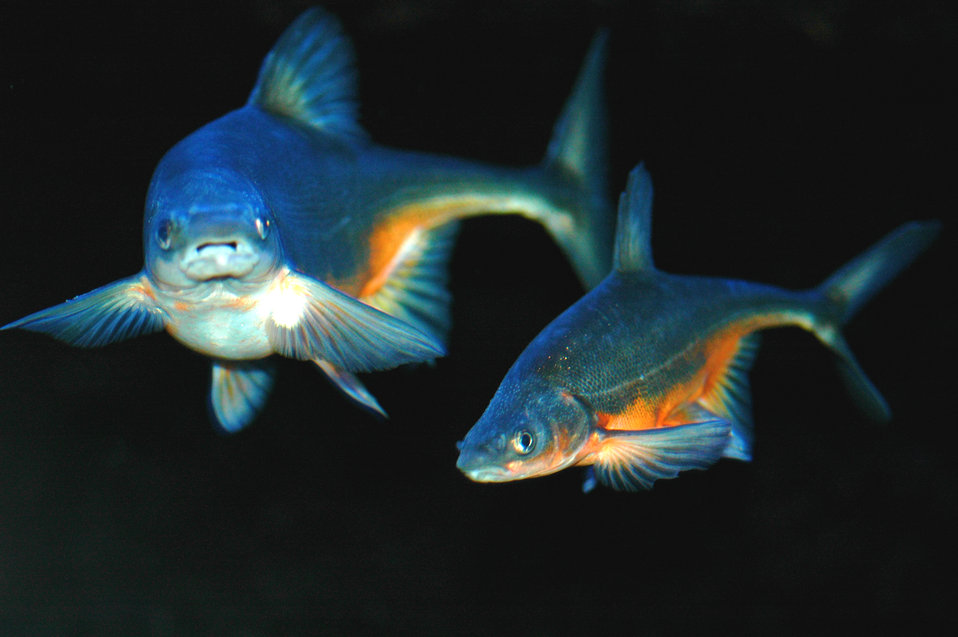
BonyTail Chub

The bonytail chub was once found in many states, including Arizona, California, Colorado, New Mexico, Utah, and Wyoming. This fish species experienced the most abrupt decline of any of the long-lived fishes native to the main-stems of the Colorado River system and, because no young individuals have been found in recent years, has been called functionally extinct. Bonytail chubs were one of the first fish species to reflect the changes that occurred in the Colorado River basin after the construction of Hoover Dam; the fish was extirpated from the lower basin between 1926 and 1950.They may still be found in the Green River of Utah and perhaps in the larger Colorado River water bodies. Gila elegans was added to the US list of endangered species on April 23, 1980.